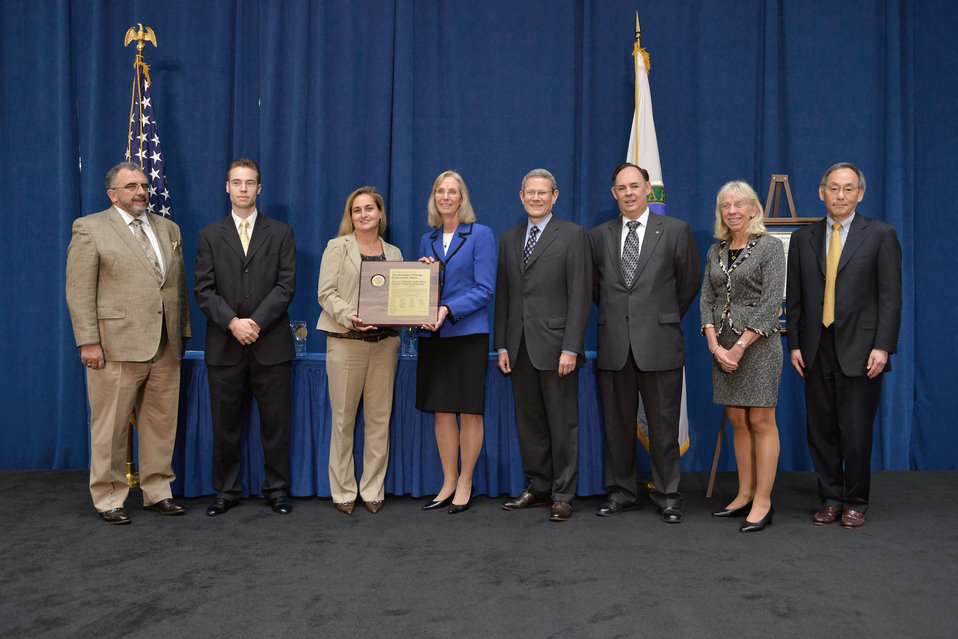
Argonne National Laboratory Nuclear Footprint Reduction

Awardees (not all pictured, *Posthumous Award): Cynthia Anderson, William G. Bass, Arthur Beach, Marvin Bennett, Antanas Bindokas*, Daniel Carlson, Roger L. Casteel, Dale J. Dietzel, Jeffrey Emery, Andrew D. Gabel, Christine M. Gelles, William F. Hamel, Jr., Angela C. Harvey*, Francis E. Healy , David Hearnsberger, Bryan Hill, Devin Hodge, Thomas Johnson, Thomas (Pat) Lewis, Joanna M. Livengood, Susan Lorenz, Steven Ludwig, George J. Malosh, Joseph A. McBrearty, Jeffrey McGhee, Thomas Morgan, Daniel Pancake, Michael Patterson, Kevin Peters, Marcus Pinzel, Irene Quintana, Cynthia Rock, Frank Root, Michael Sensibaugh, James M. Shuler, Michael Sodaro, Carol Sohn, Gail Stine, Joey R. Stroble, Jeffrey Toeller, Bryan Voelz, John A. Walker, Peter J. Washburn, Wade Weyerman. At the close of FY11 the Nuclear Footprint Reduction and Deactivation Plan Team successfully completed the three year initiative. Completion of the Nuclear Footprint Reduction and Deactivation Plan resulted in significant risk reduction, enhanced compliance, and in FY12 is beginning to yield operational cost savings at Argonne. The team represented a diverse group of Federal and contractor employees who persistently and innovatively worked together across several organizations and Department of Energy programs to achieve a highly favorable result. Highlights of completed commitments include the following:
•Argonne prepared compliant documented safety analyses for seven nuclear facilities and the DSAs were approved and implemented;
•Four nuclear facilities were de-inventoried to less than Hazard Category 3 (radiological) status;
•Building 306 was downgraded from Hazard Category 2 to Hazard Category 3;
•Dramatic reduction in nuclear inventory was achieved including completion of nearly 100 shipments of remote handled transuranic waste disposed off site;
•Argonne nuclear facility operating costs are on track to decline over 40% from FY11 to FY12.